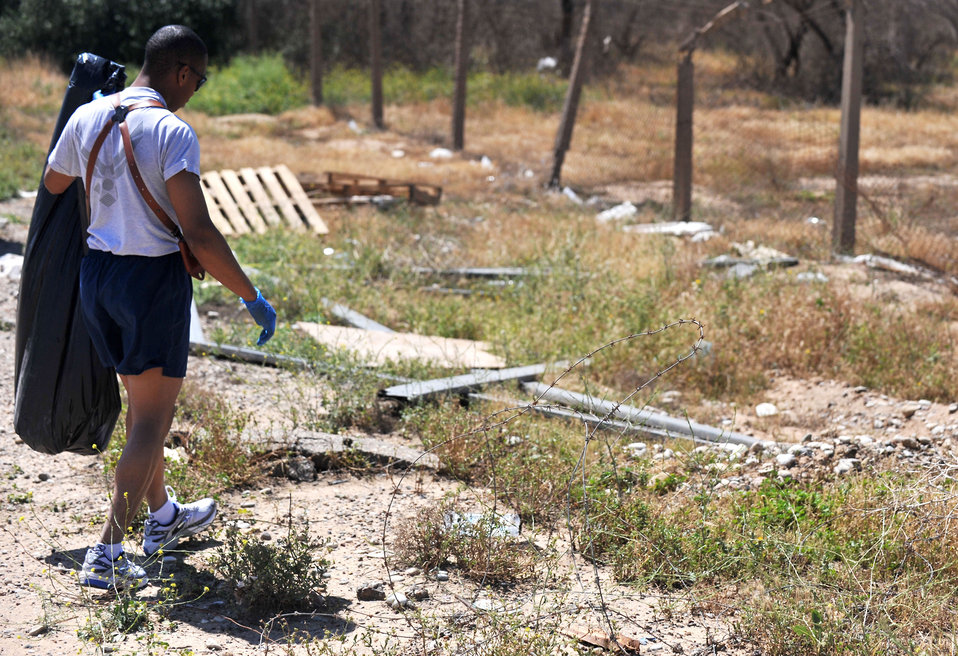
Airmen help make Iraq a little greener

Senior Airman Troy Jenkins looks for trash to pick up off the side of the roads, April 24, 2011, at Contingency Operating Site Warrior, Iraq. Airman Jenkins is a 321st Expeditionary Operation Support Squadron supply technician.